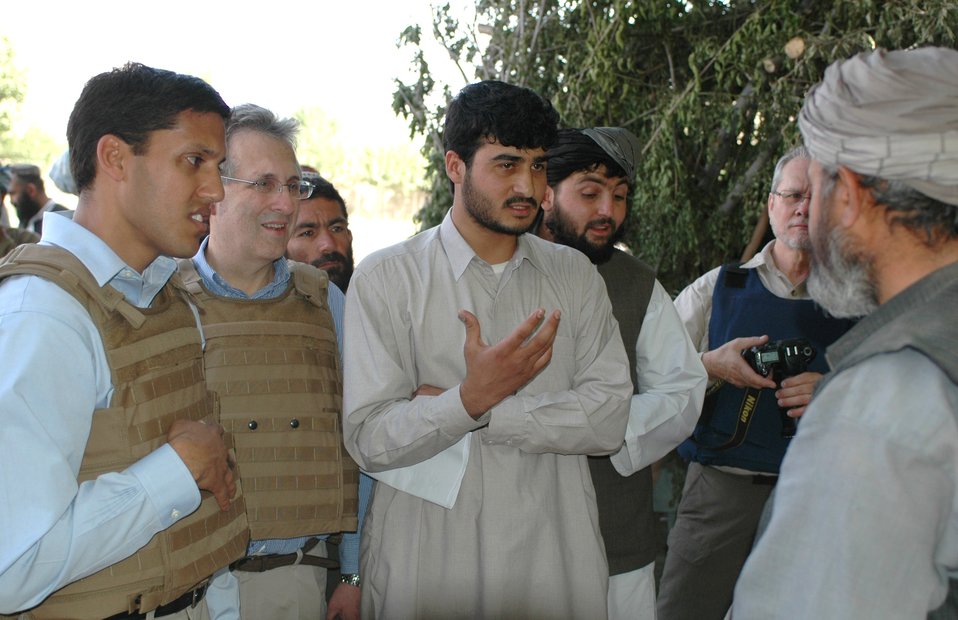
Dr Shah Visits Argandab April 10, 2010